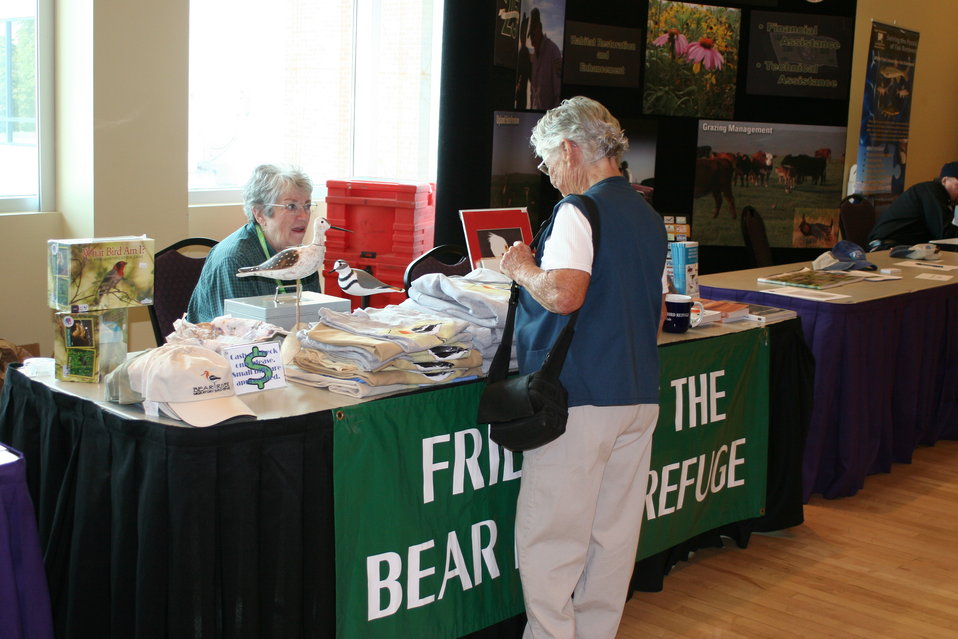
Outreach

Photo Credit: Suzanne Fellows / USFWS
The U.S. Fish & Wildlife Service sponsored the 2012 Federal Duck Stamp Art Contest September 28 and 29 in Ogden, Utah, at Weber State University. A panel of five judges was responsible for choosing the art work used to design the 2013-2014 Migratory Bird Hunting and Conservation Stamp.